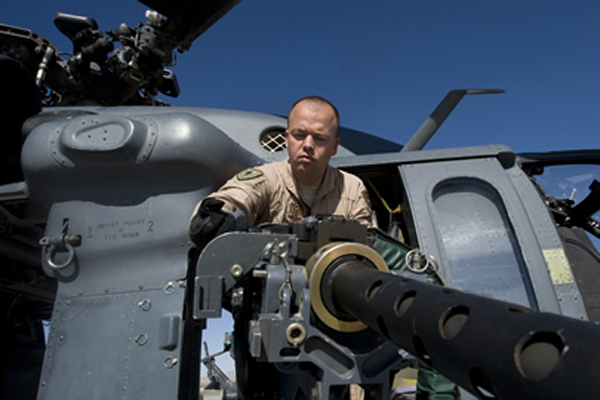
Wounded Warrior

Staff Sgt. David Mullikin conducts a pre-operations check on a 50-caliber machine gun attached to an HH-60 Pave Hawk June 23, 2011, at Nellis Air Force Base, Nev. Sergeant Mullikin is a flight engineer assigned to the 66th Rescue Squadron. He returned from a tour in Iraq suffering from post-traumatic stress disorder and got help through the Air Force Wounded Warrior program.